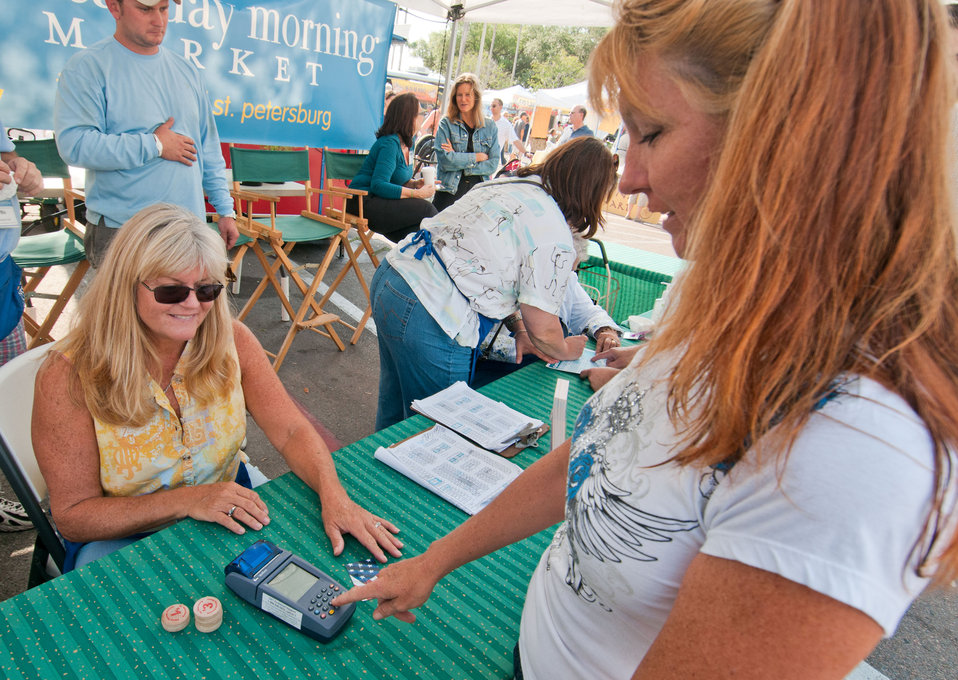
Joney O'Hare, right, uses Saturday Morning Market tokens to pay for some of her purchases funded by her U.S. Department of Agriculture (USDA) Supplemental Nutrition Assistance Program (SNAP) benefits at the Saturday Morning Market, in St. Petersburg, FL on April 14, 2012. Worden Farm (www.wordenfarm.com) says, “We at Worden Farm are happy to work with the USDA SNAP. The tokens are exchanged with vendors for food, food producing plants or seeds. Vendors return the tokens to the market organizer for an equal dollar amount that is electronically deposited into the vendor’s bank account. Worden Farm is a family farm that provides certified organic produce to Southwest Florida through community supported agriculture (CSA) membership programs and retail sale at several farmer’s (community) markets. Depending on the state, EBT cards can also hold value from other food and nutrition partners that can add a certain value or provide a certain degree of match to the value of other programs add to the card.